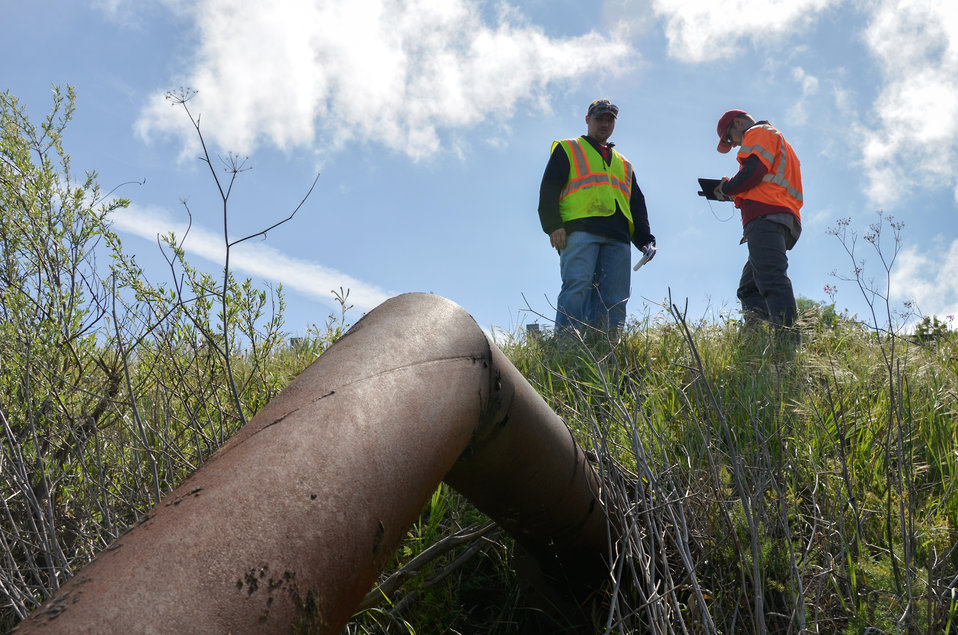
Pipe in a Sacramento River levee

Levee inspectors Ryan Larson (right) and Nate Meisgeier, both with the U.S. Army Corps of Engineers Sacramento District, inspect the condition of a pipe during a routine levee inspection on the Sacramento River near Rio Vista, Calif., March 27, 2013. The results of U.S. Army Corps of Engineers levee inspections determine continued eligibility for federal aid in repairing levees damaged by floods or storms, and help communities understand and make informed decisions about their flood risk. Corps inspectors document all maintenance issues with GPS coordinates and photographs to help agencies that maintain levees prioritize and fix issues as quickly as possible. (U.S. Army photo by Chris Gray-Garcia/Released) Watch the video: bit.ly/1eJKvX4